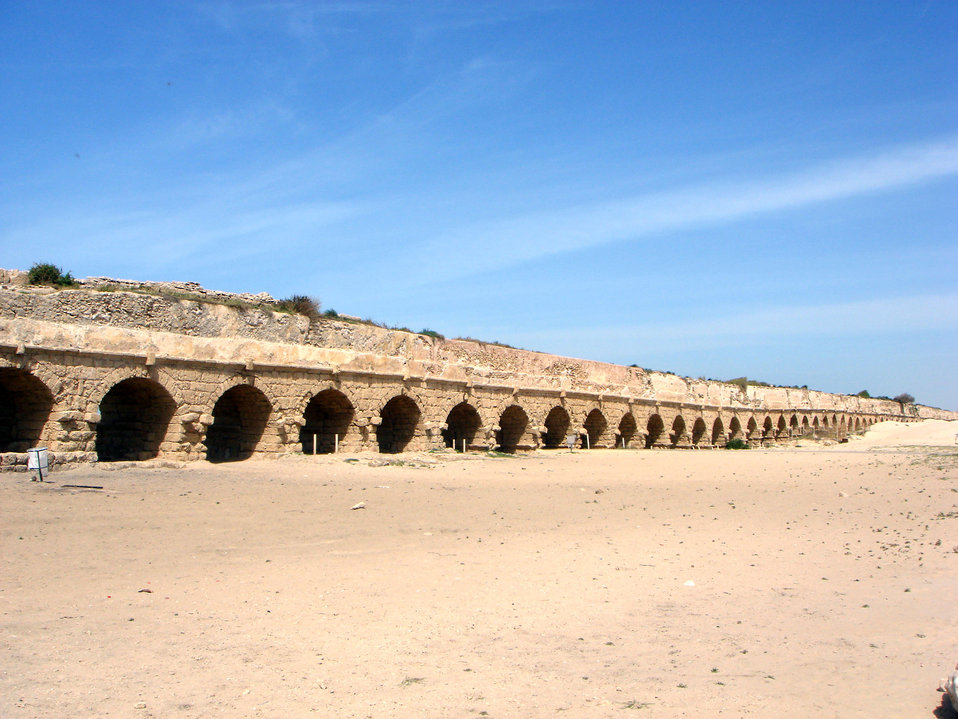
Ruins of the Roman aqueduct at Caesarea Maritima.